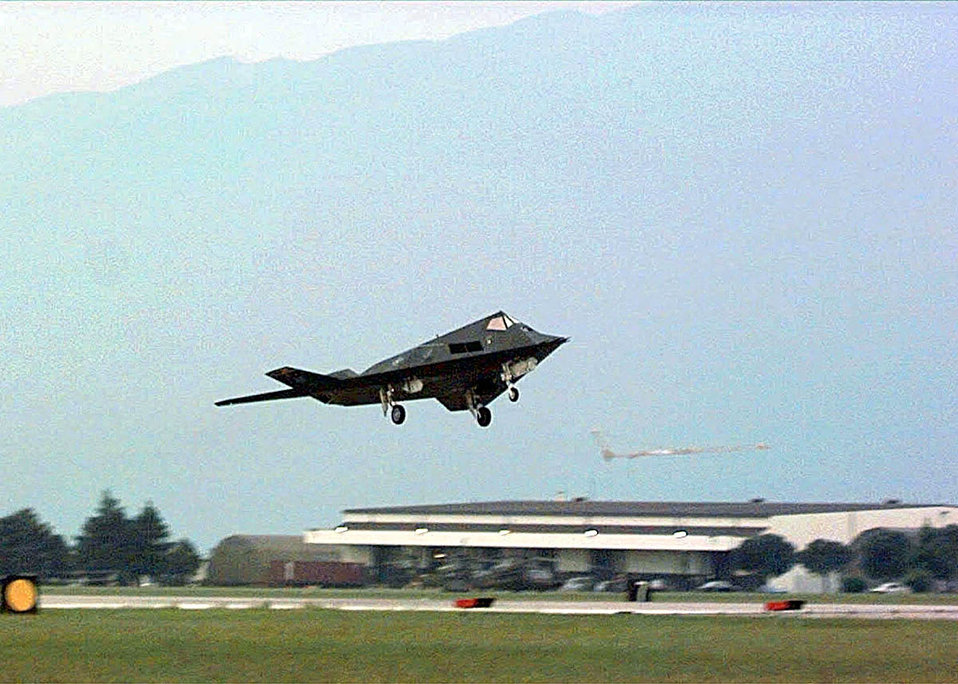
Nighthawk

AVIANO AIR BASE, Italy --An F-117 Nighthawk lifts off from here, for a mission over Kosovo in support of NATO's Operation Allied Force. F-117s are deployed to Aviano as part of the 31st Air Expeditionary Wing.